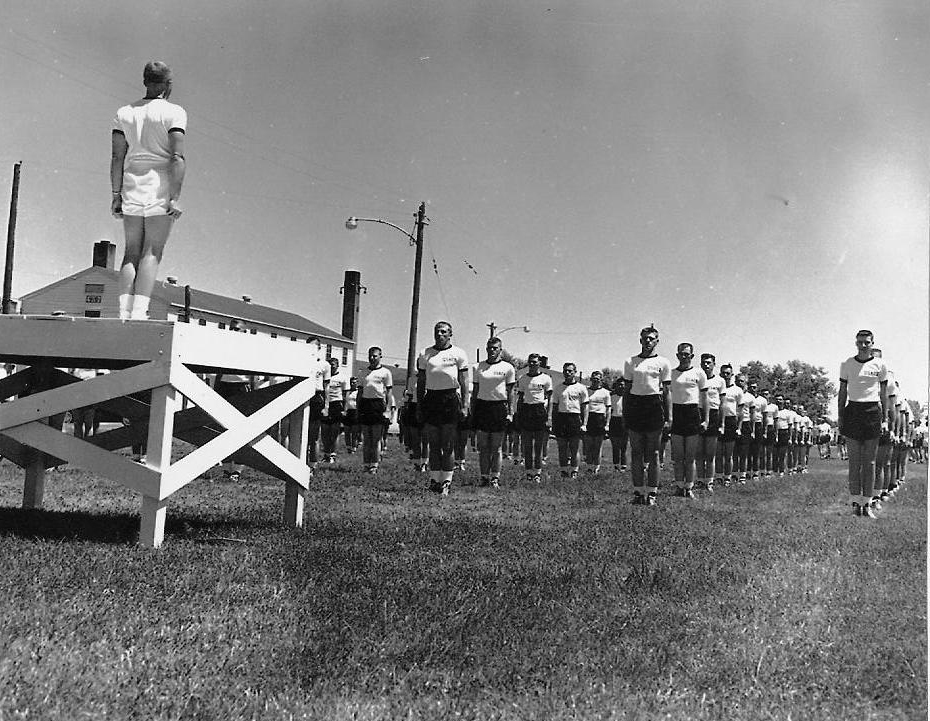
50th anniversary marks 306 future cadets taking oath at academy

LOWRY AIR FORCE BASE, Colo. -- Basic cadets from the first Air Force Academy class line up for physical training here, the temporary location for the academy while permanent facilities were being constructed in Colorado Springs.